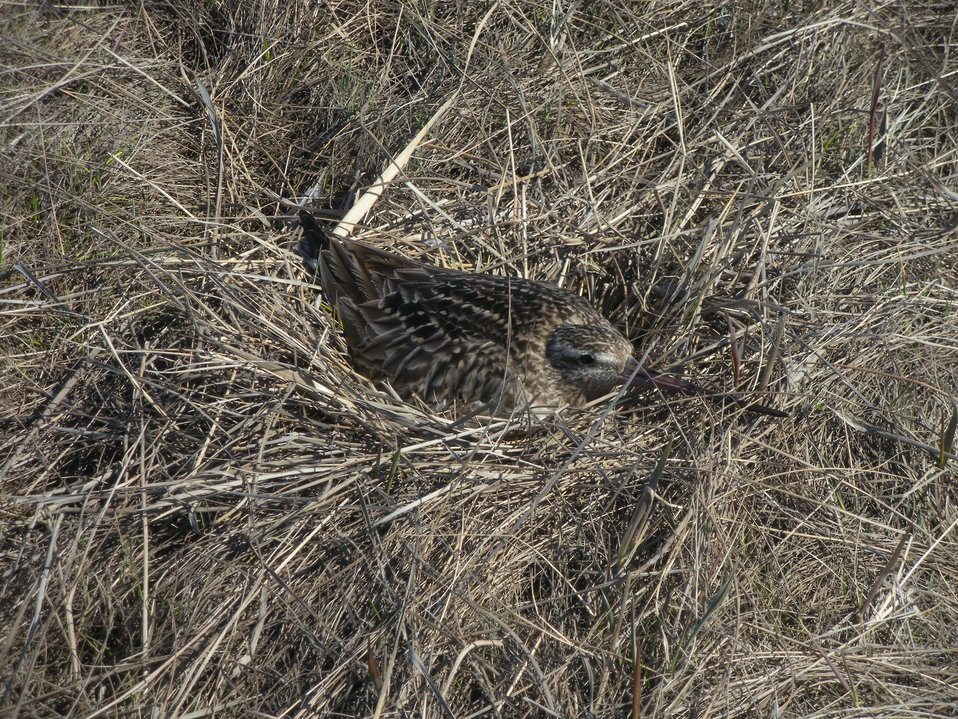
Godwit incubating

Yukon Delta NWR